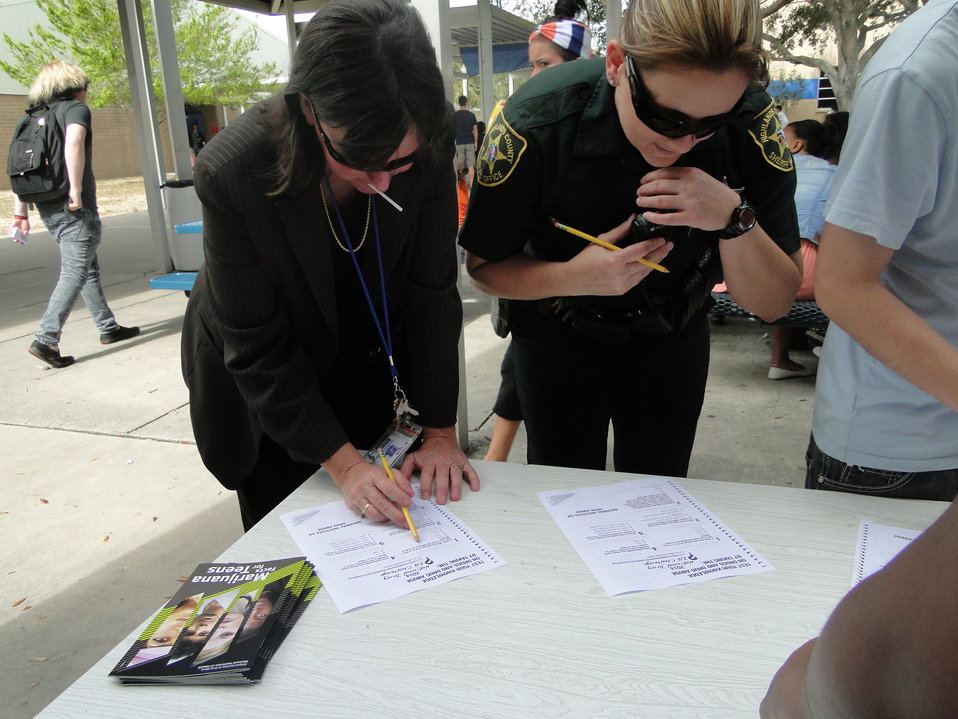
Sebring High School